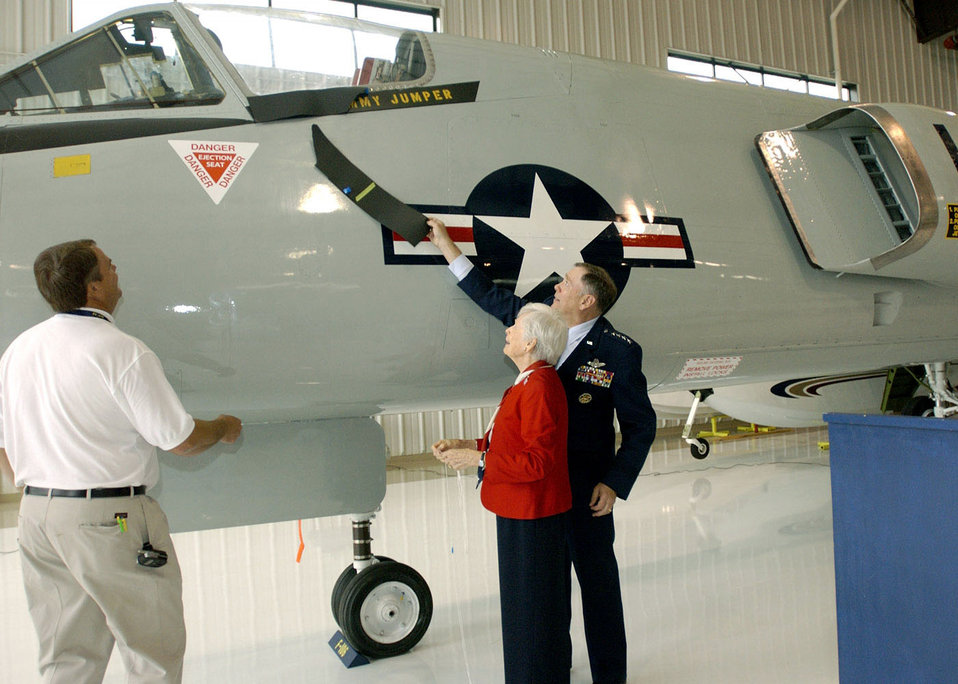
General Jumper visits Pacific Coast Air Museum

SANTA ROSA, Calif. -- Air Force Chief of Staff Gen. John P. Jumper and his mother, Marie Jumper, unveil the F-106A Delta Dart aircraft dedicated to his late father, Maj. Gen. Jimmy Jumper, at the Pacific Coast Air Museum here Oct. 16.